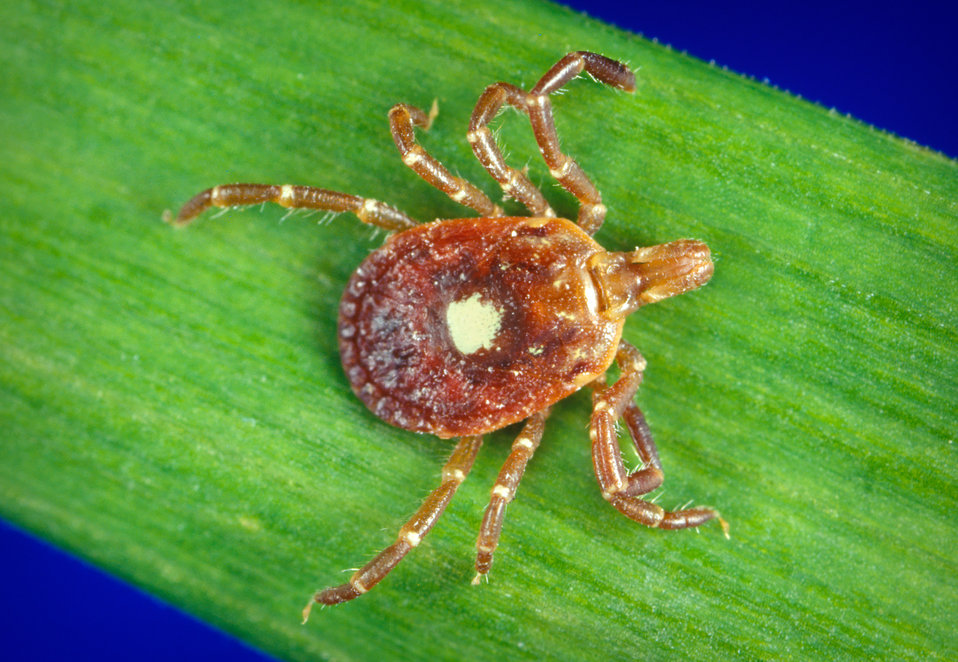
This is a female 'Lone star tick', Amblyomma americanum, and is found in the southeastern and midatlantic United States.